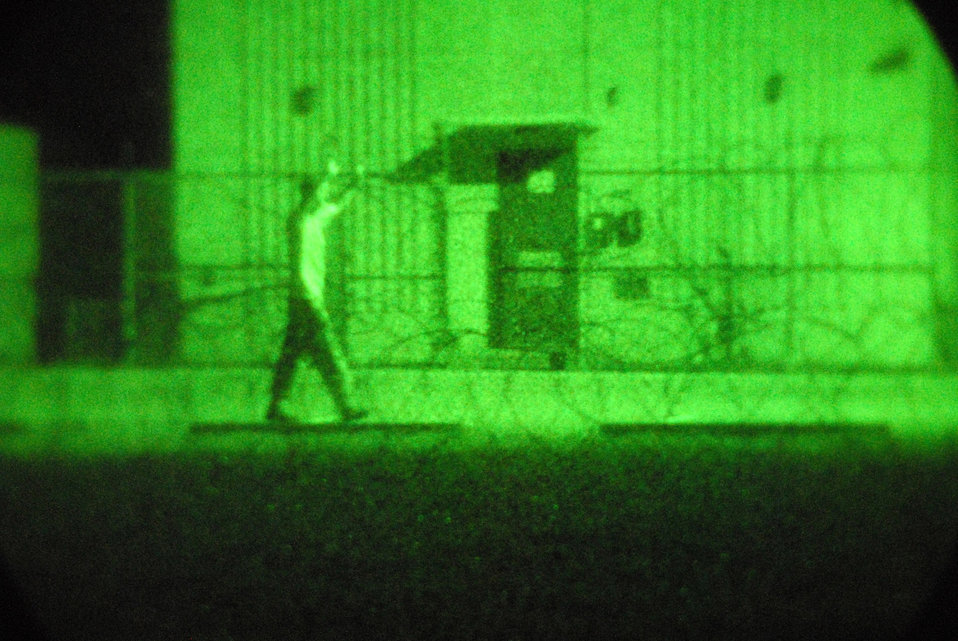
BEVERLY BULLDOG

8th Security Forces Squadron members direct a suspicious individual away from the air traffic control tower during a peninsula wide operational readiness exercise July 22 at Kunsan Air Base, South Korea. The PENORE evaluates base personnel's readiness and the ability for them to conduct their wartime missions.